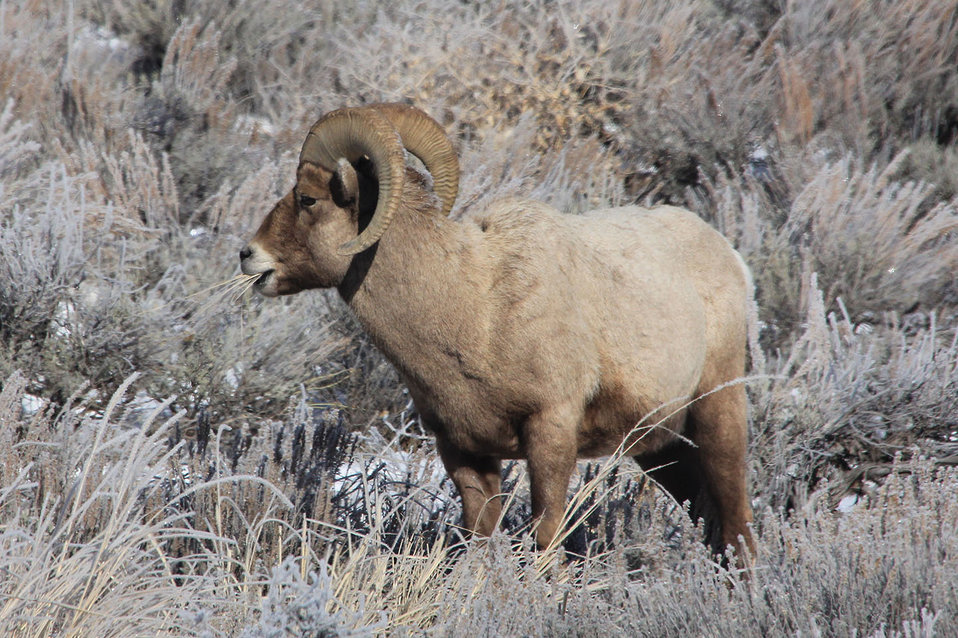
You Caught Me With My Mouth Full

A bighorn sheep munches on a mouthful of dried grass near the Refuge Road on the National Elk Refuge.

Credit: USFWS / Ann & Tony Hough, National Elk Refuge volunteers